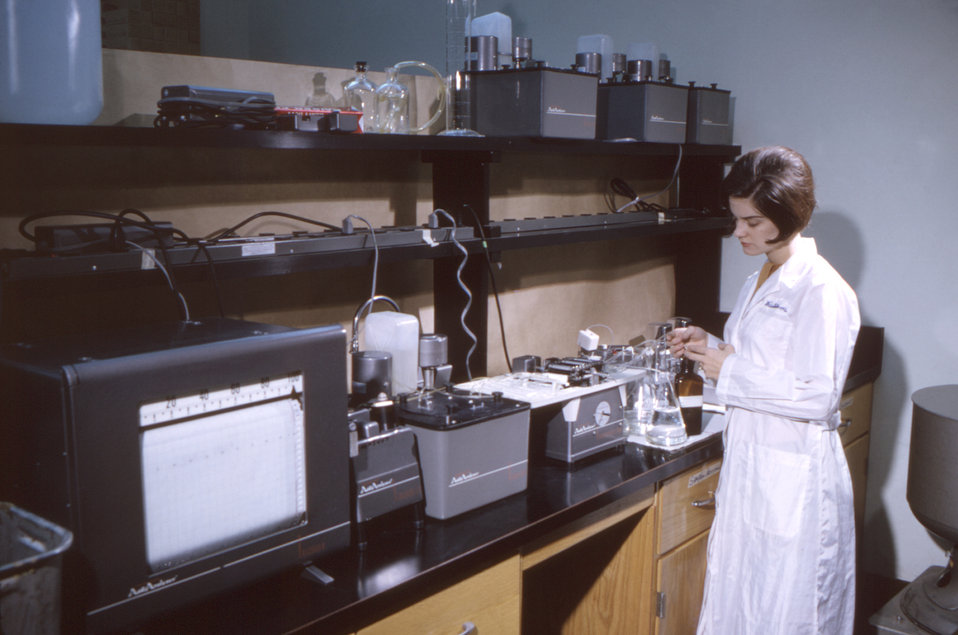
This historic 1966 image depicted a laboratorian using an AutoAnalyzer, configured to determine uric acid levels in samples to be analyzed.